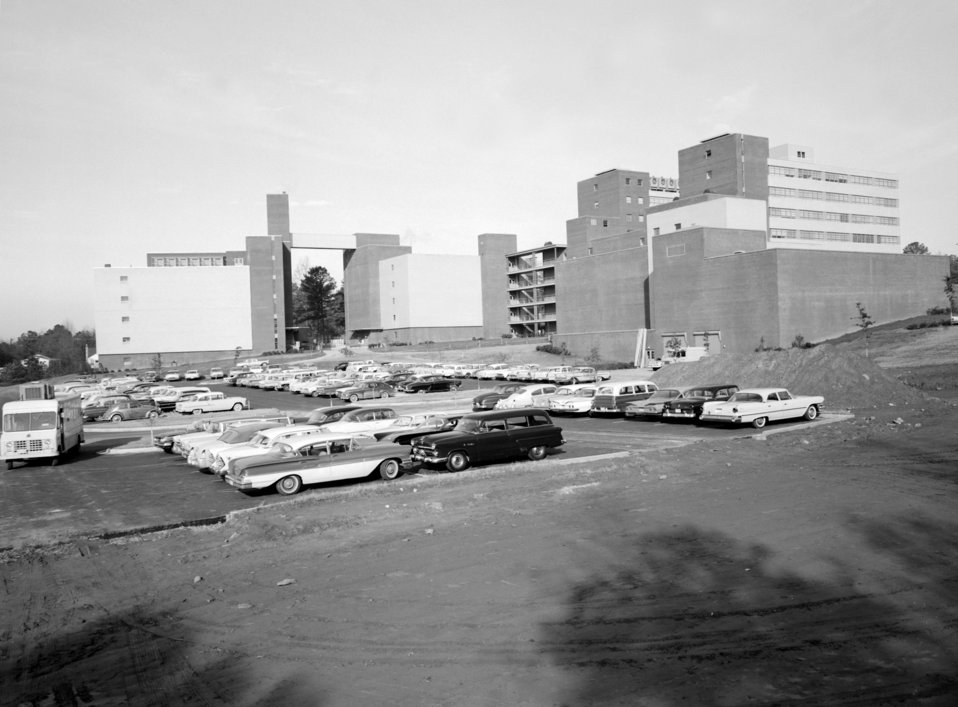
Rear view of the new CDC Buildings on Clifton Road, Atlanta, GA. in 1960 (facing west).